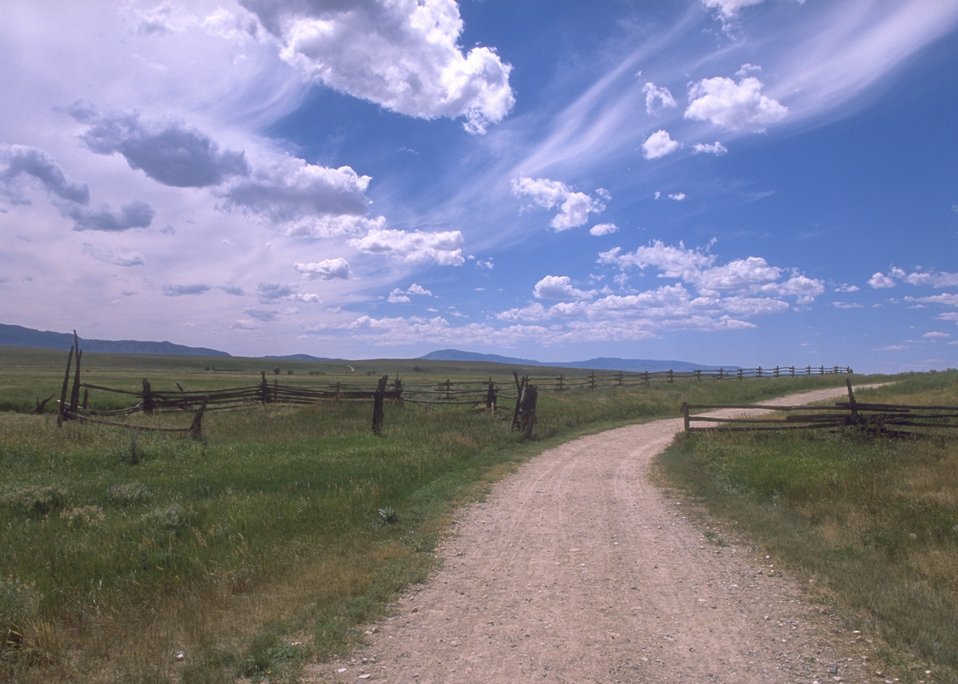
Mormon Trail near Martin's Cove, Rawlins Field Office.